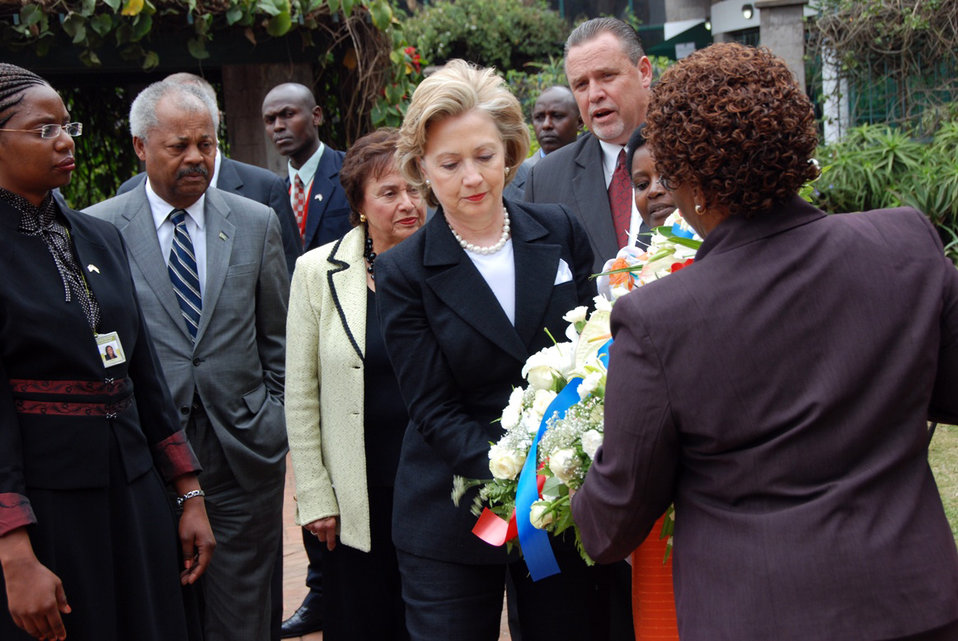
Secretary Clinton Attends Kenya Wreath Laying Ceremony

U.S. Secretary of State Hillary Rodham Clinton participates in the wreath-laying ceremony in Memorial Park commemorating victims of the U.S. Embassy bombing, Nairobi, Kenya, August 6, 2009.